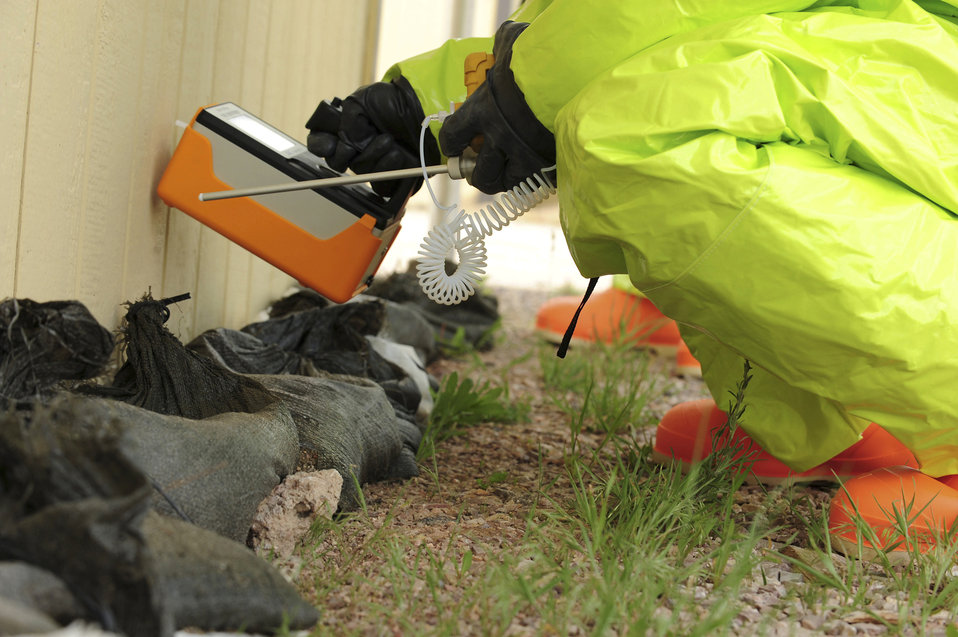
Ellsworth Airmen ready for any emergency

Airman 1st Class David Jack uses a gamma-ray spectrometer in an emergency management exercise June 3, 2010, at Ellsworth Air Force Base, S.D. The spectrometer can locate, measure and identify contamination. He is an emergency management journeyman with the 28th Civil Engineer Squadron.